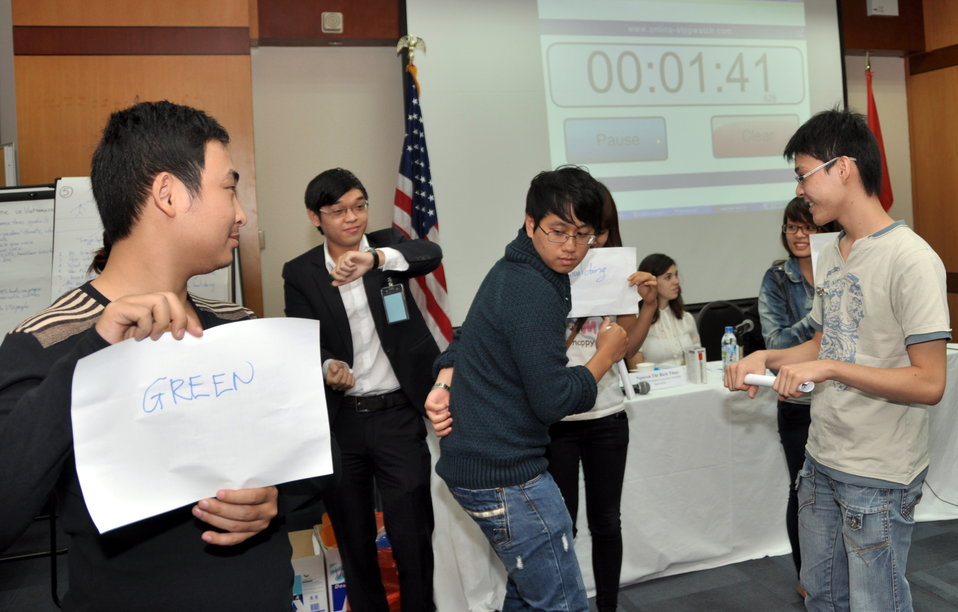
Students join the ‘USAID and Higher Education in Vietnam’ talk

Photo: @USAIDVietnam, November 19, 2012